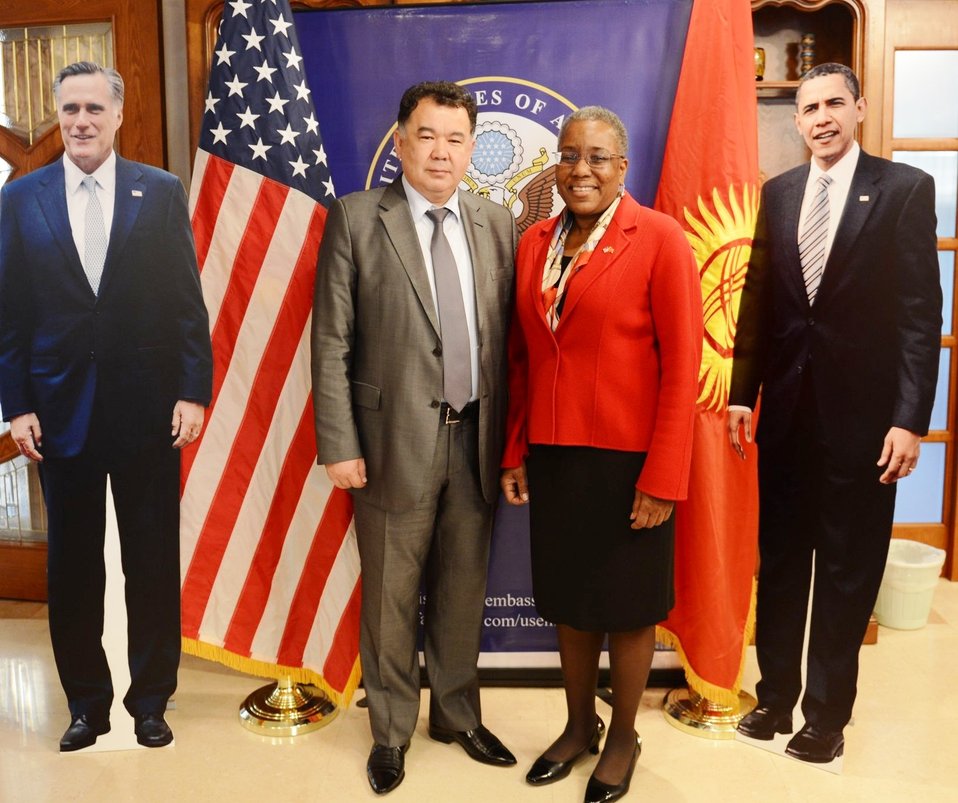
Ambassador Spratlen and the Chairman of the Central Election Commission Pose for a Photo

U.S. Ambassador to Kyrgyzstan Pamela Spratlen and the Chairman of the Central Election Commission of the Kyrgyz Republic pose for a photo at an election event at the U.S. Embassy in Bishkek, Kyrgyzstan, November 7, 2012.